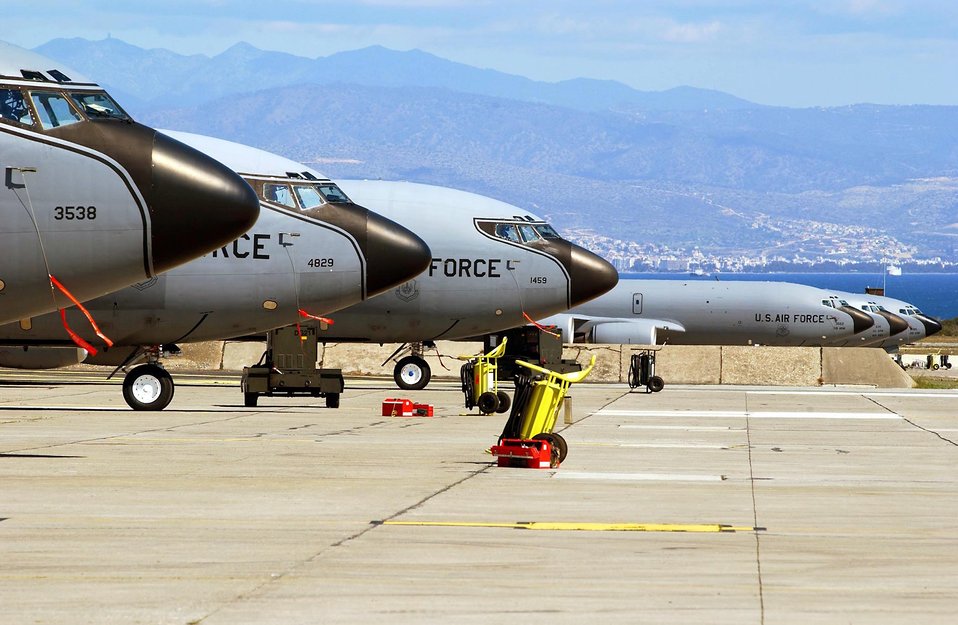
Tanker line

OPERATION IRAQI FREEDOM -- KC-135 Stratotankers assigned to the 401st Air Expeditionary Wing sit ready on the flightline of a forward-deployed base located in the Mediterranean region. The U.S. Air Force, U.S. Navy, the British Army and the Royal Air Force joined forces at an RAF base here to set up a refueling mission.